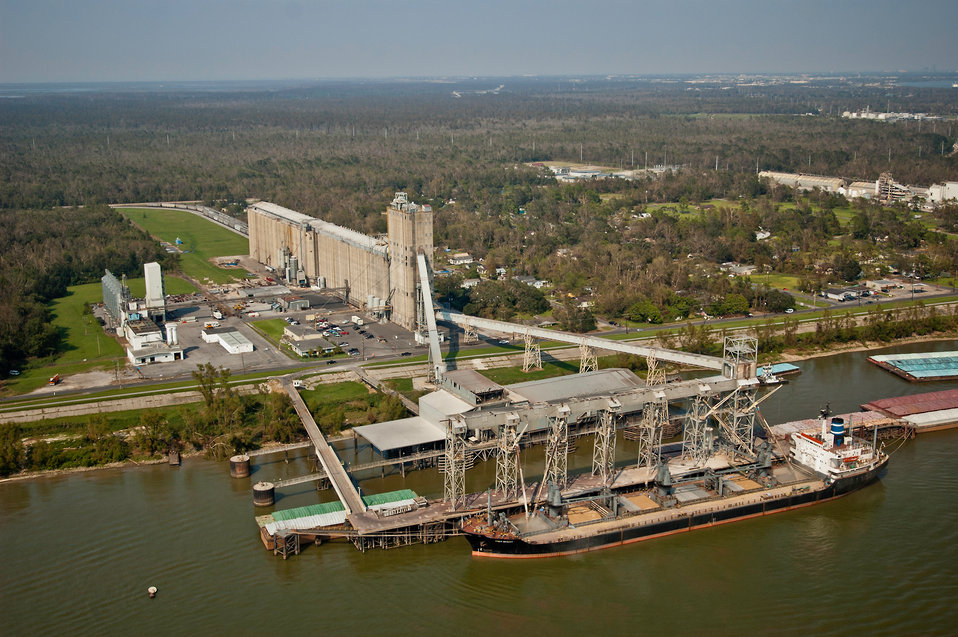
A grain storage facility fills a barge with grain for transportation on the Mississippi River in the Port of New Orleans, New Orleans, LA on Sept. 9, 2005.